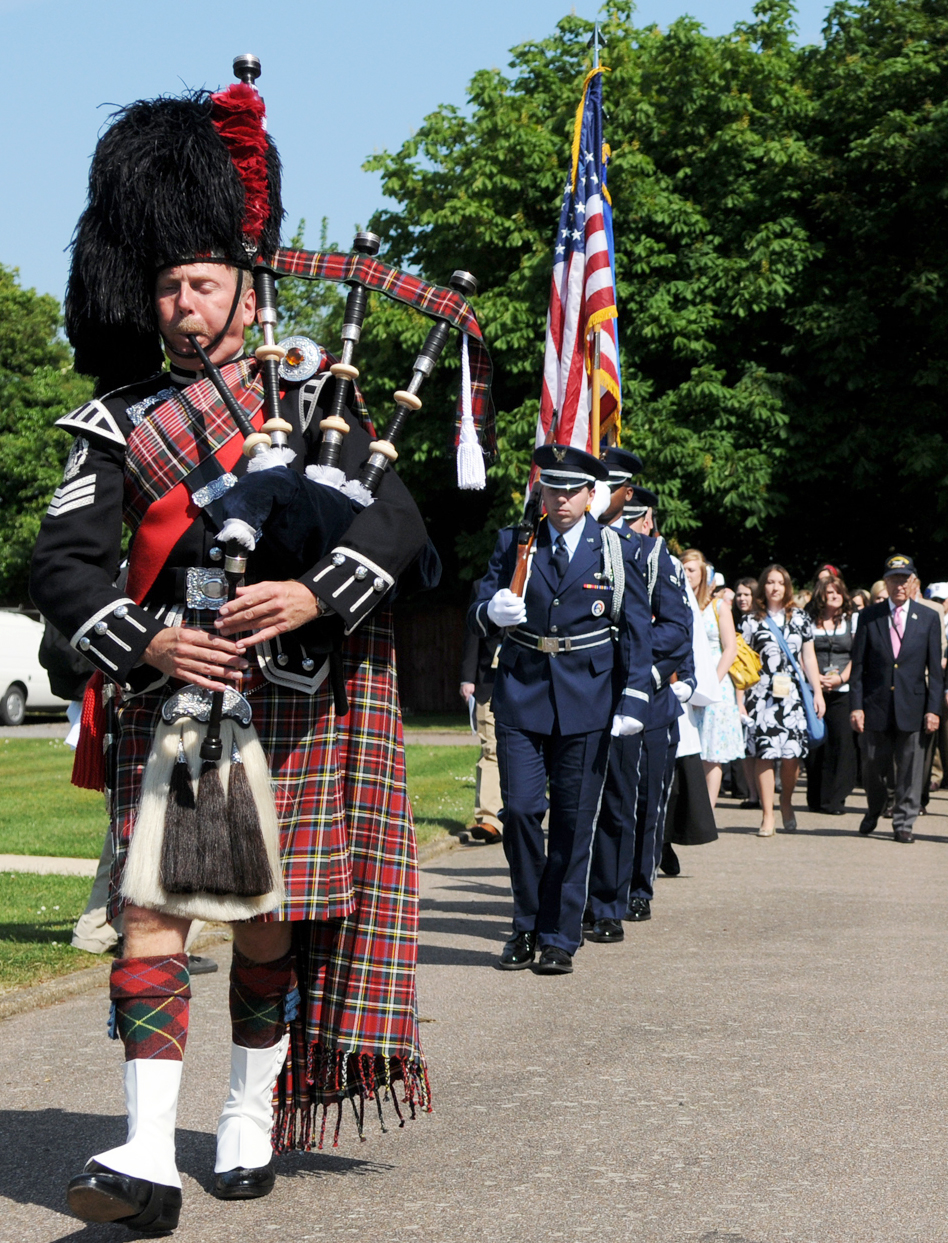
World War II vets visit former home

Bagpiper Dave Harper followed by members of the honor guard from Royal Air Force Mildenhall, England, lead a precession of World War II veterans, students and faculty members from Missouri's College of the Ozarks to a ceremony June 1 at Thorpe Abbots, England. The airfield was the former home of the 100th Bomb Group. The group was in England on a tour of historic World War II sites coinciding with the 65th anniversary of the allied invasion of occupied France.